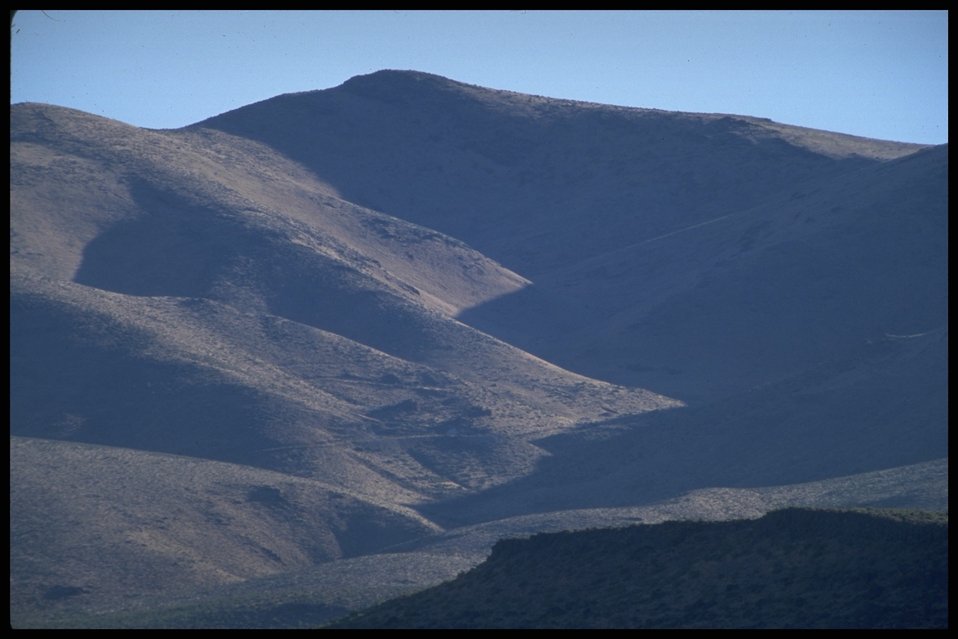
Lakeview District. Hills near Abert Rim.